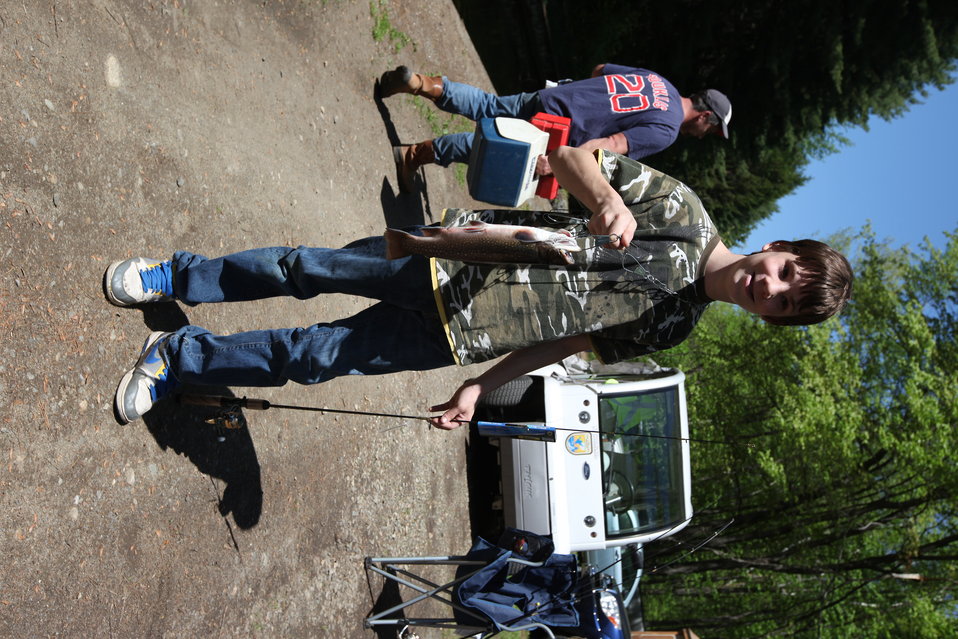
Youth Fishing Day 2012

Megan Nagel/USFWS